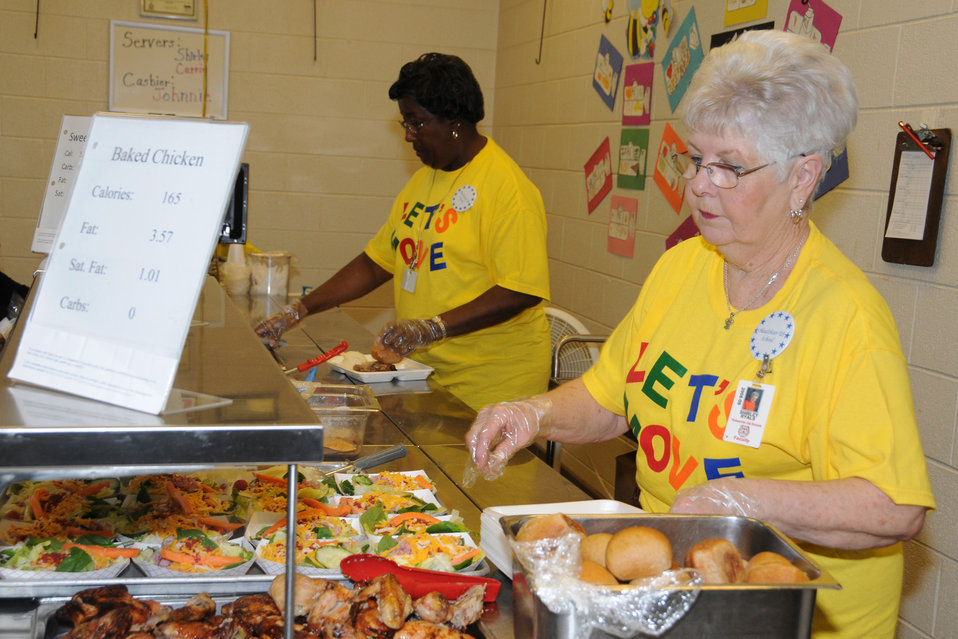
Lets Move - DSC 2230a (2)

Child Nutrition Assistants Shirley Ryals and Carrie Crump serve nutritious foods to Thomasville Primary School students during the lunch meal showcasing why their school won a USDA HealthierUS School Challenge Gold Award